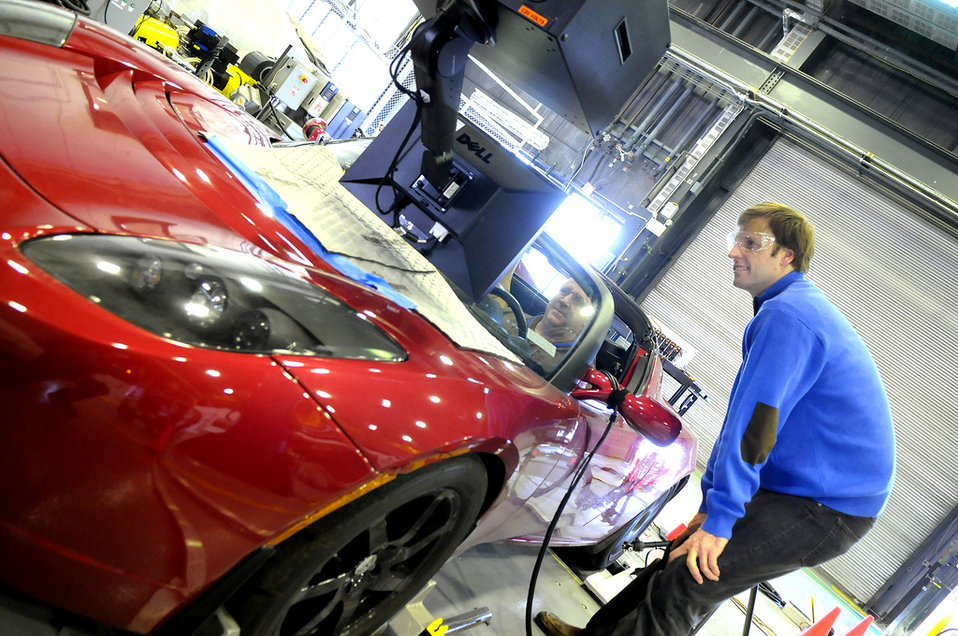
Mike Duoba, Chief Engineer at Argonne National Laboratory's Advanced Powertrain Research Facility, looks on as Geoff Amann completes a driving cycle with All-Electric Tesla Roadster at the lab's Two-Wheel Dynamometer Lab.

Data obtained from the Tesla will help researchers develop test procedures that provide an unbiased, consistent and practical approach to evaluating electric vehicles.